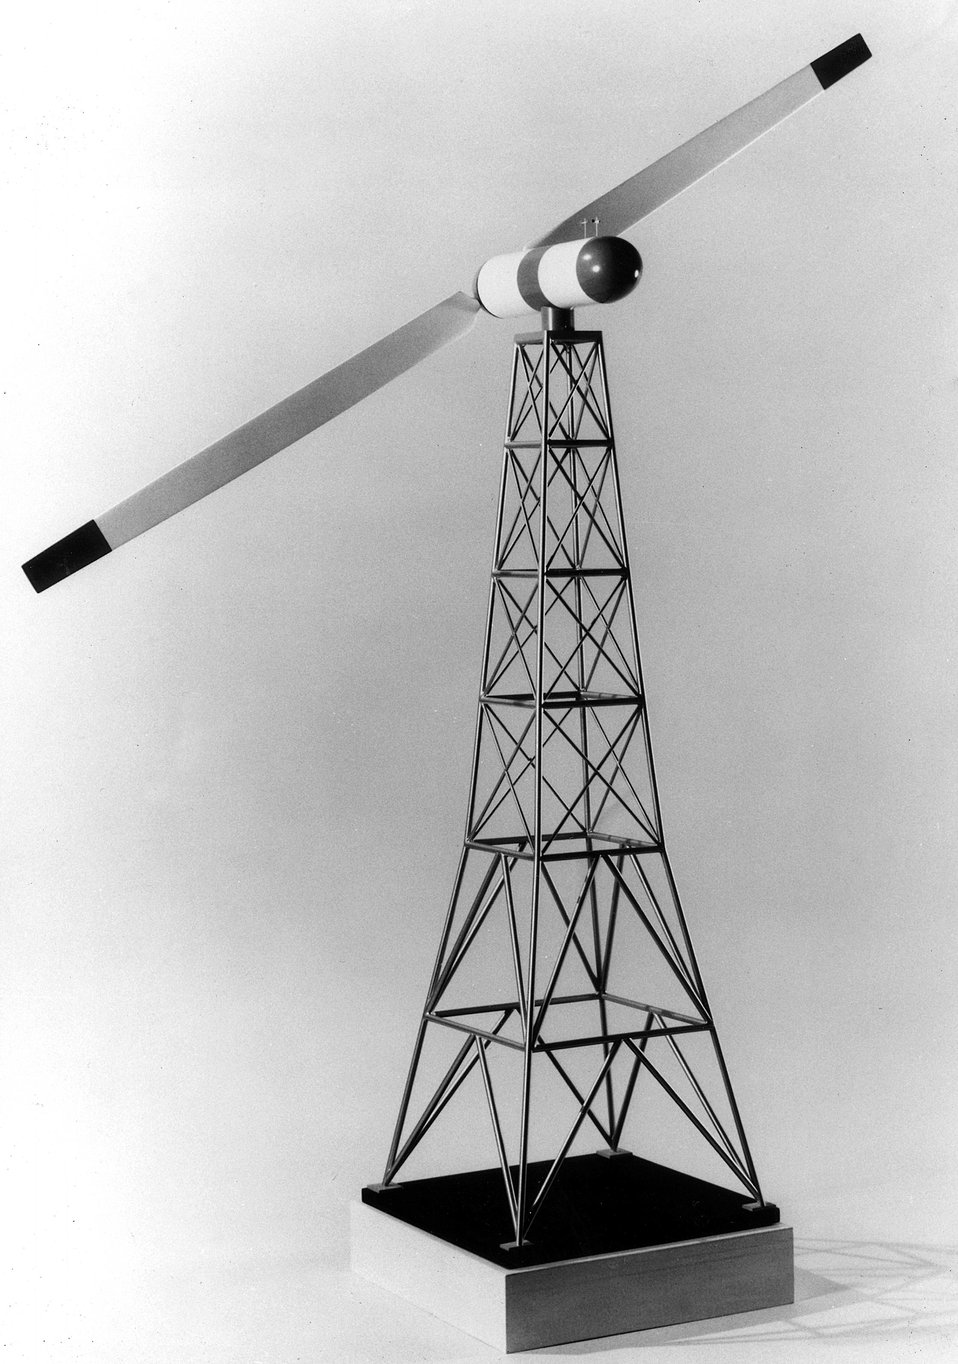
A 125-foot-tall windmill, as depicted by this model, is being developed for the Energy Research and Development Administration (ERDA) by NASA's Lewis Research Center in Cleveland, Ohio. c. 1975